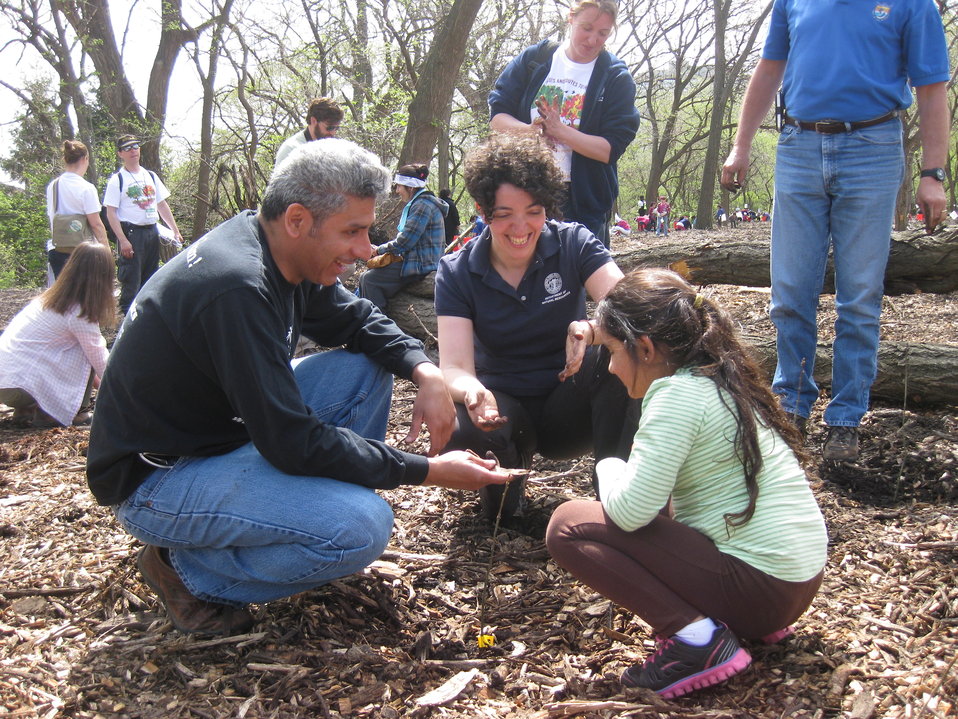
Chicago Park Commissioner Juan Salgado with Chicago Park District Zhanna Yermakov

Chicago Park District Burnham Corridor Community Planting Day
May 10, 2014
Photo by USFWS; Louise Clemency